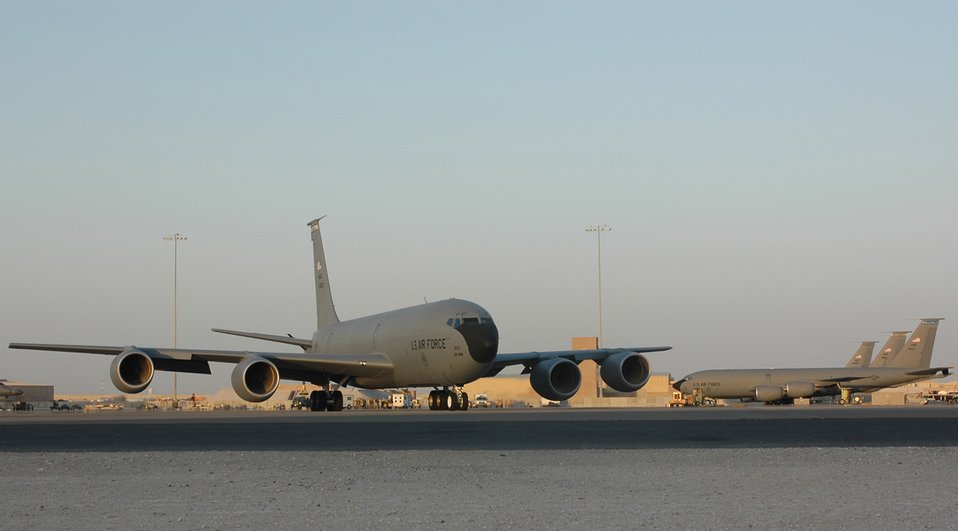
Airpower Summary for July 18, 2007

A KC-135 Stratotanker with the 340th Expeditionary Air Refueling Squadron prepares for another mission as it taxis out to the runway at a base in Southwest Asia. Coalition tankers flew 48 sorties and refueled 193 aircraft July 17 supporting operations Enduring Freedom and Iraqi Freedom.